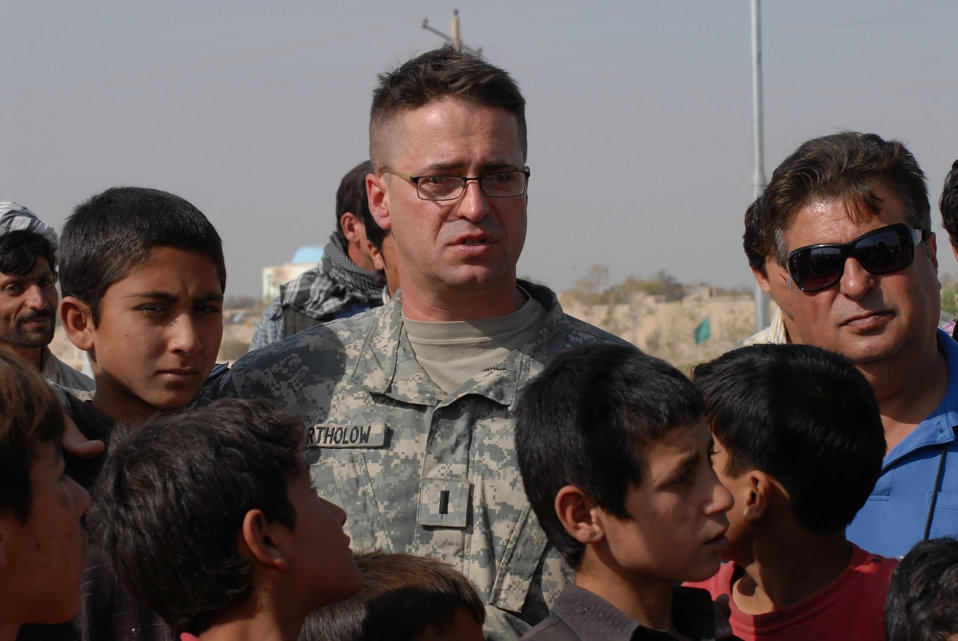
'On the Road' in Balkh Province